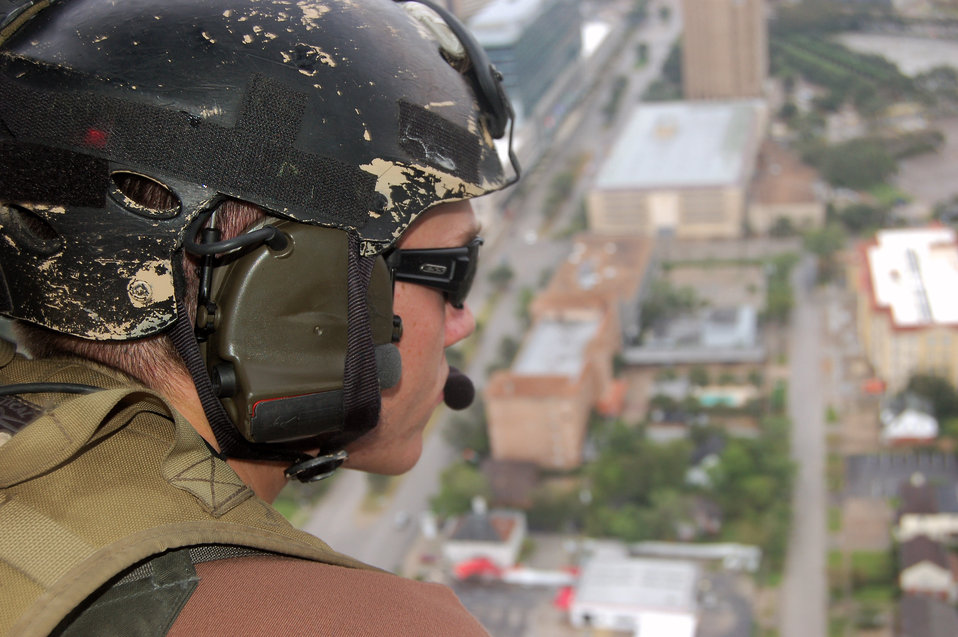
Airmen survey Ike damage

Staff Sgt. Rick Caldwell looks from an HH-60G Pave Hawk at the damage caused by Hurricane Ike Sept. 13 around Houston. Airmen from across the Air Force are deployed to the 331st Air Expeditionary Group at Randolph Air Force Base, Texas, to assist with rescue missions. Sergeant Caldwell is assigned to the 48th Rescue Squadron from Davis-Monthan Air Force Base, Ariz.